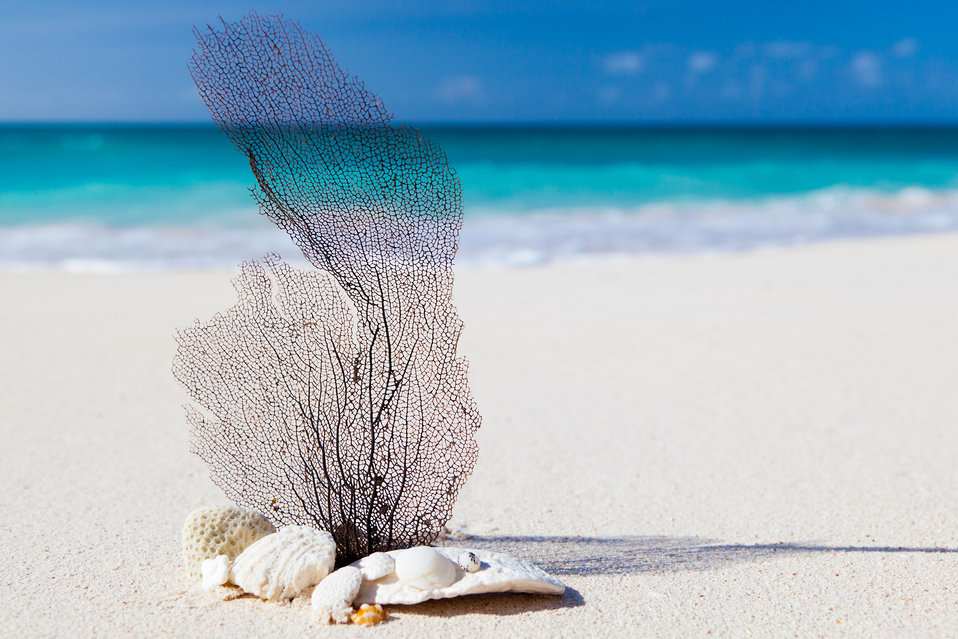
Sea and beach concept image.